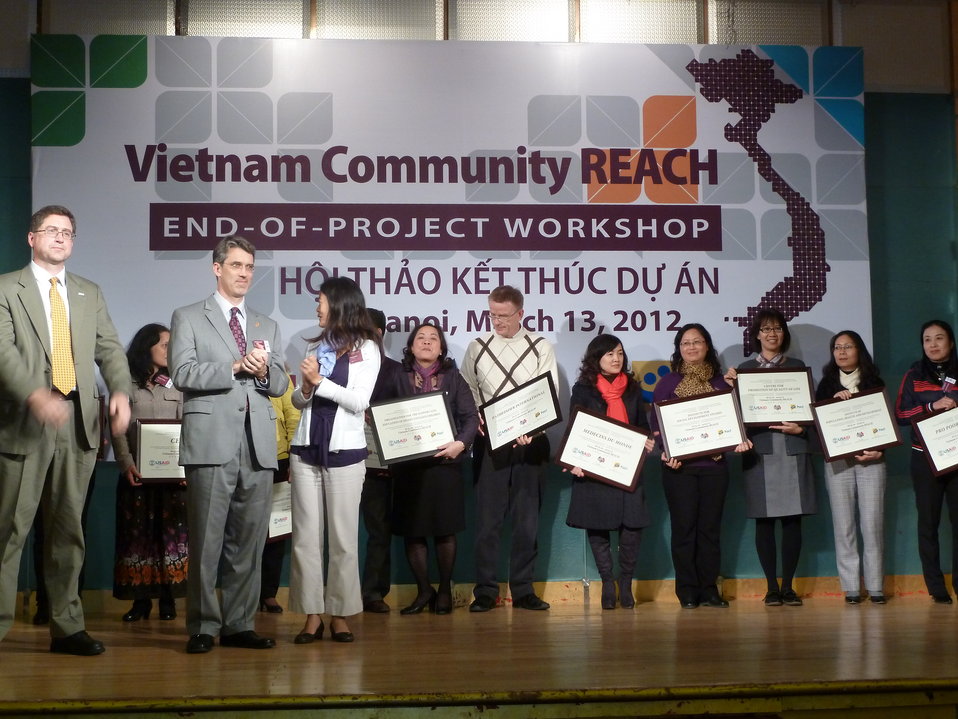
USAID, PEPFAR, and Pact award certificates to local and international partners for their work in addressing HIV in Vietnam

Community REACH project close-out with USAID and implementing partner, Pact